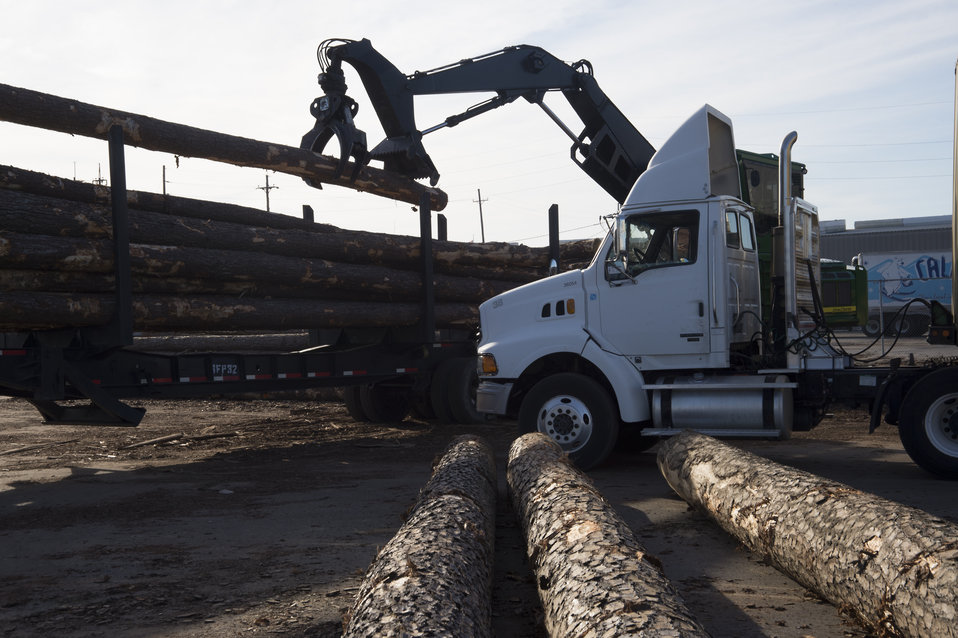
Logs from the U.S. being shipped overseas are unloaded near the Port of New Orleans in New Orleans, LA on Wednesday, Nov. 20, 2013.